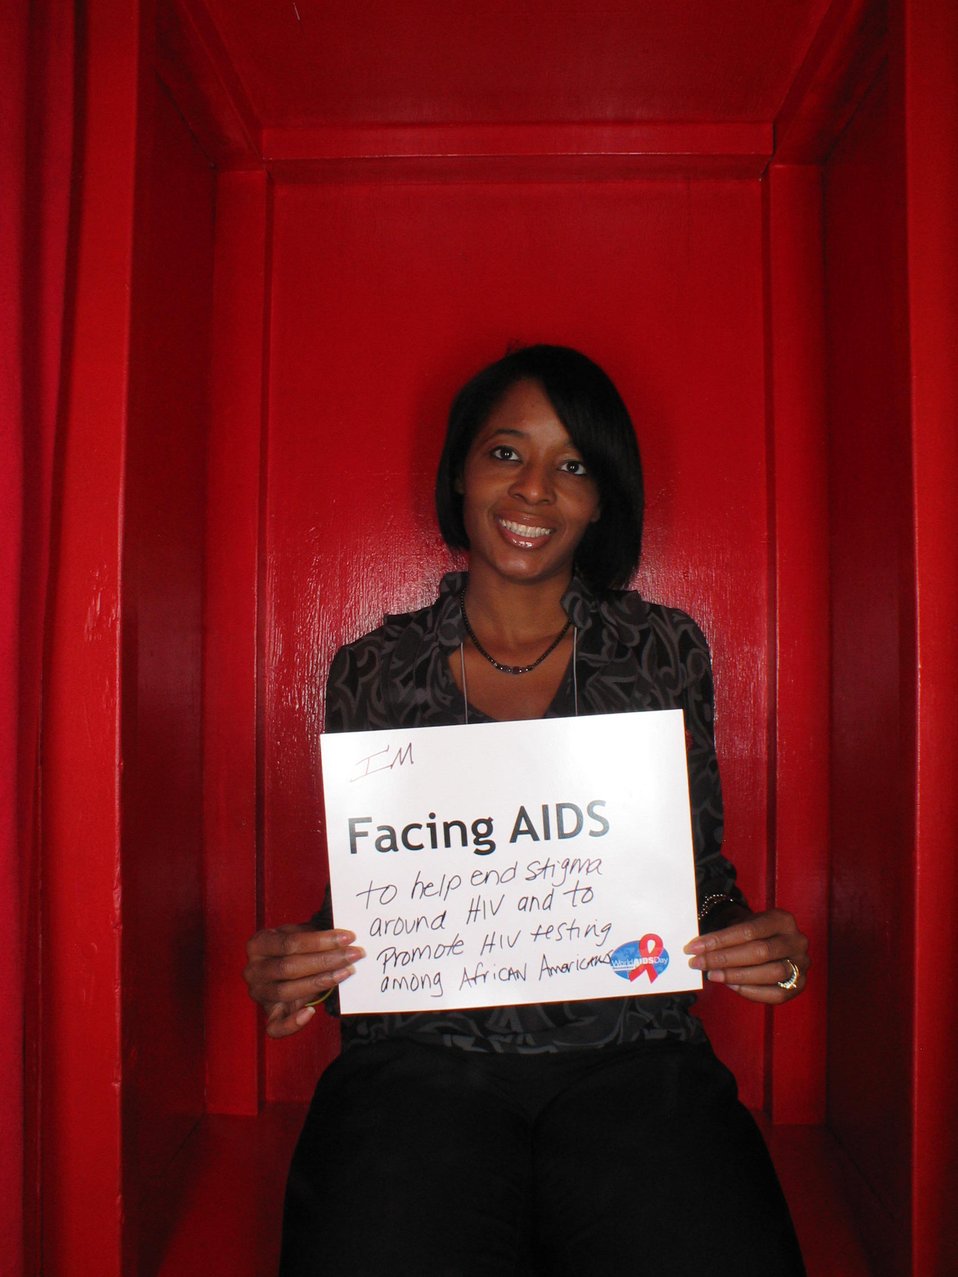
Facing AIDS to help end stigma around HIV and to promote HIV testing among African Americans